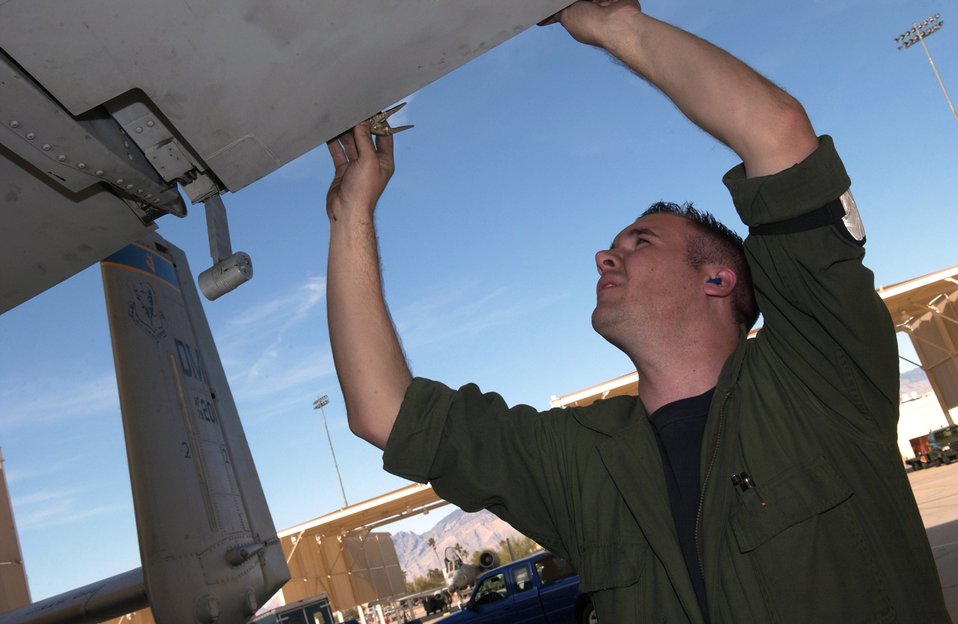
We're ready!

Staff Sgt. Brian Yorke works on an A-10 Thunderbolt II Feb. 17 during an operational readiness exercise at Davis-Monthan Air Force Base, Ariz., being conducted by the Air Combat Command inspection team. The ACC inspectors test the ability of 355th Wing Airmen to prepare to deploy and fight when called. Sergeant Yorke is assigned to the 355th Equipment Maintenance Squadron.